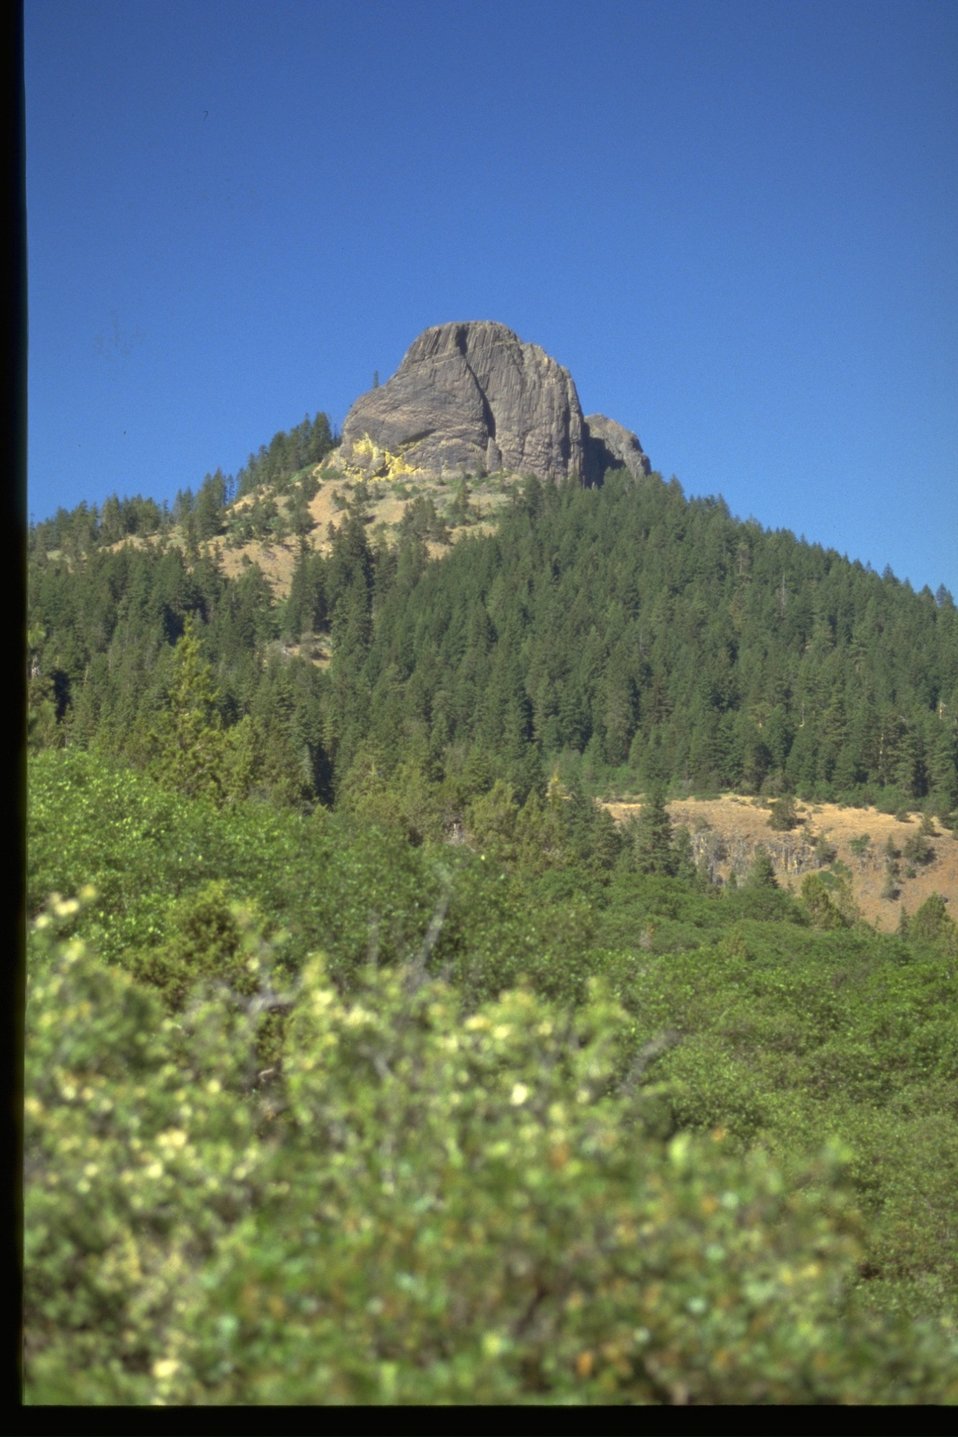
A scenic shot of Pilot Rock.